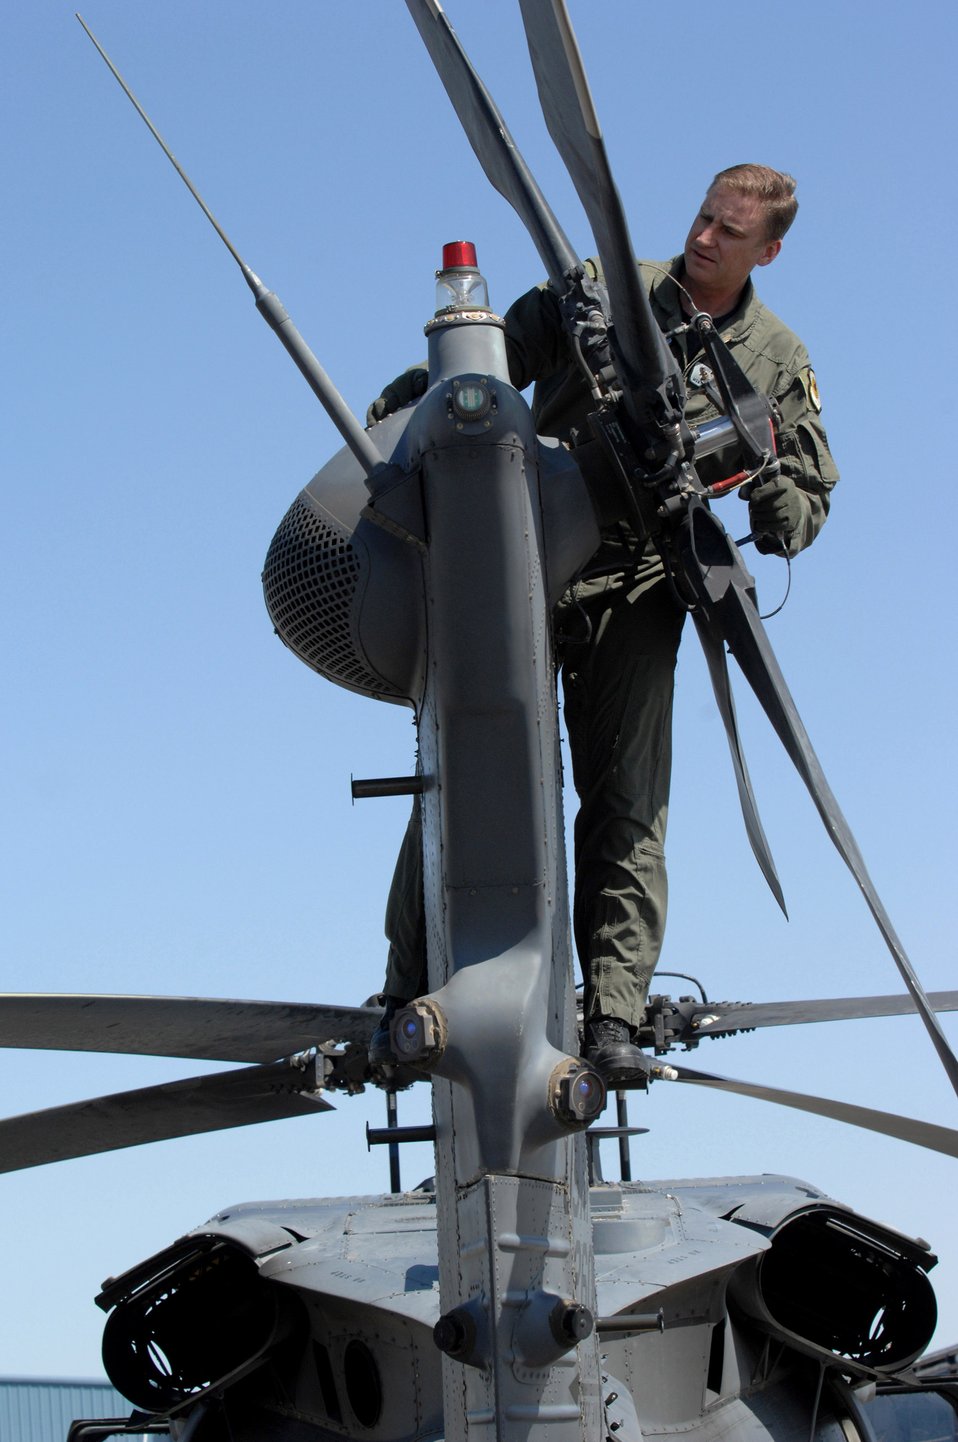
Search and rescue training

Master Sgt. Michael Harkins inspects an HH-60 Pave Hawk rotor tail assembly May 3 during a combat search and rescue integration exercise in Sandy, Utah. The objective of the exercise was to expand expertise and integration with Utah's 211th Aviation Group AH-64 Apache Joint Rotary Wing, 4th Fighter Squadron F-16 Fighting Falcon Striker assets, special operations forces and conduct extensive joint CSAR operations against surface to air threats. Sergeant Harkins is a flight engineer with the 34th Weapons Squadron at Nellis Air Force Base, Nev.